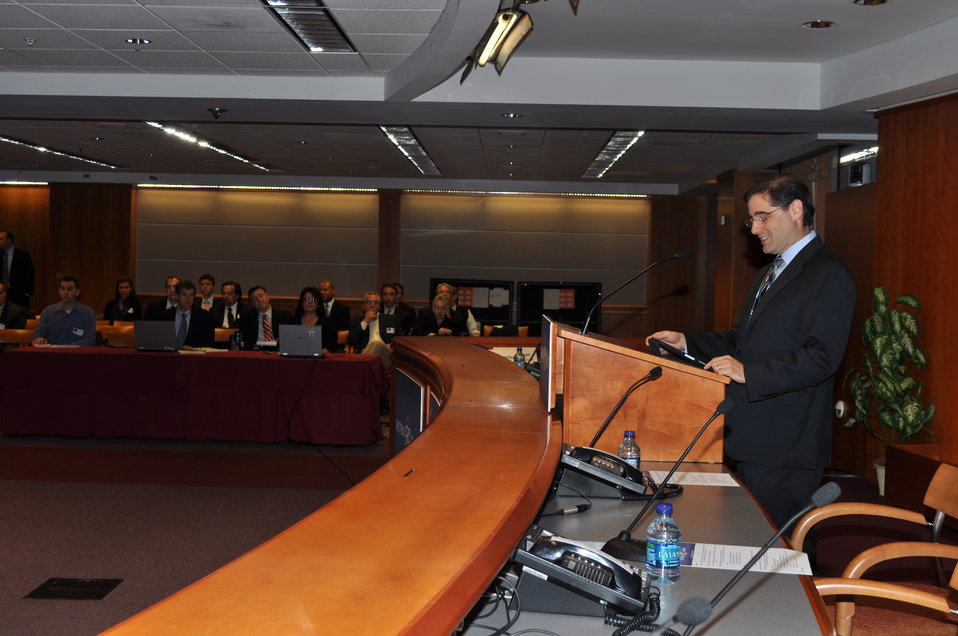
Spectrum Summit